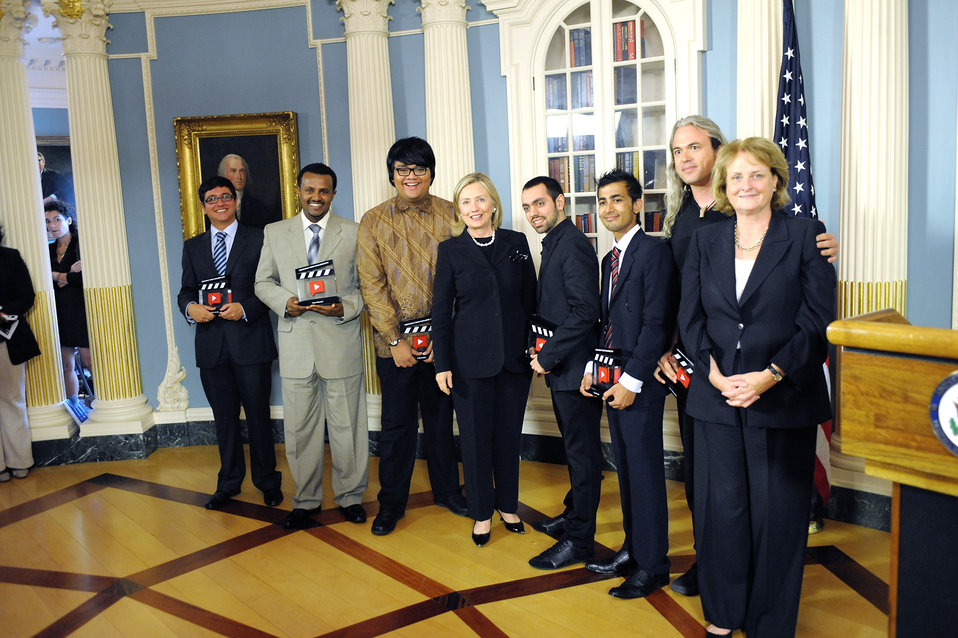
Secretary Clinton and Under Secretary McHale Pose for a Photo With 2010 Democracy Video Challenge Winners

U.S. Secretary of State Hillary Rodham Clinton (center) and Under Secretary of State for Public Diplomacy and Public Affairs Judith McHale (right) pose for a photo with the 2010 Democracy Video Challenge winners in the Treaty Room at the U.S. Department of State in Washington, D.C., on September 10, 2010.